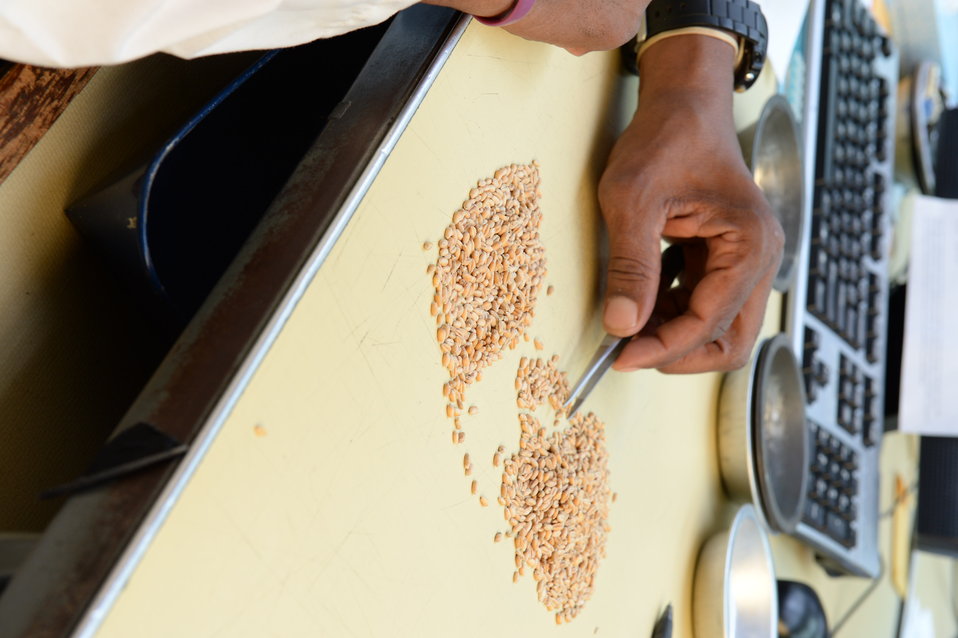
A U.S. Department of Agriculture (USDA) Grain Inspection, Packers and Stockyards Administration (GIPSA) Federal Grain Inspection Service (FGIS) scientist tests wheat at the FGIS inspection laboratory in New Orleans, LA on Monday, Nov. 18, 2013.